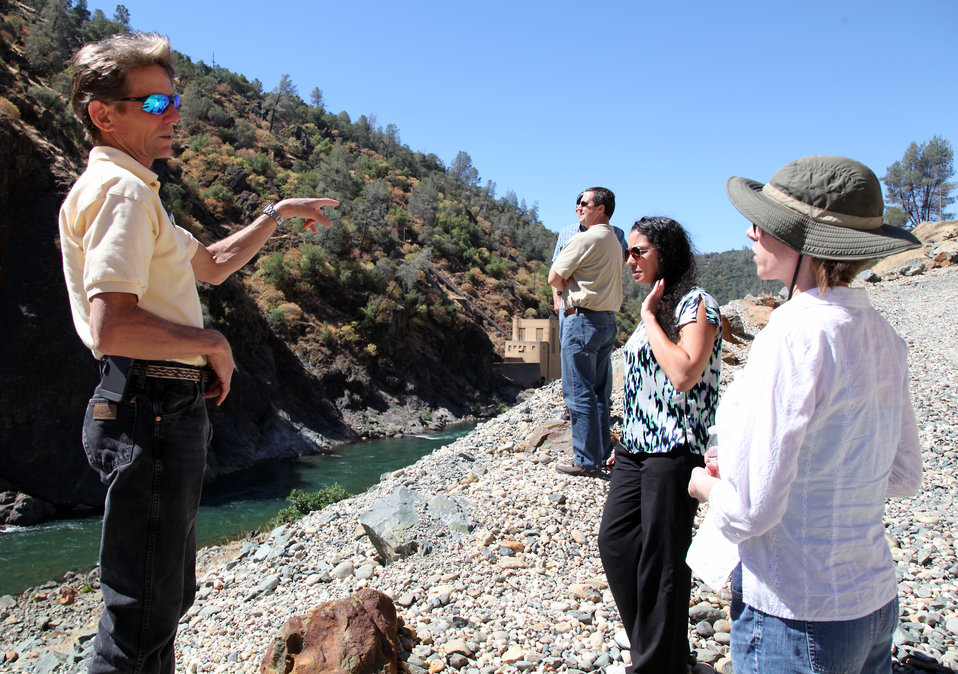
Corps reconnaissance team tours Yuba River

From left to right, Tom Johnson, Yuba County Water Agency consultant, answers questions from Joana Savinon, project manager; and Melissa Hallas, lead planner; during a visit to the Yuba River immediately downstream of Englebright Dam June 18, 2014. Members of the Sacramento District team assessing possible federal projects for ecosystem restoration along Northern California's Yuba River reviewed the water’s route from Daguerre Point Dam up to Downieville. The USACE team was accompanied by members of the Yuba County Water Agency and several YCWA consultants in this initial trip to gather data on the overall state of the Yuba and water facilities along the route.